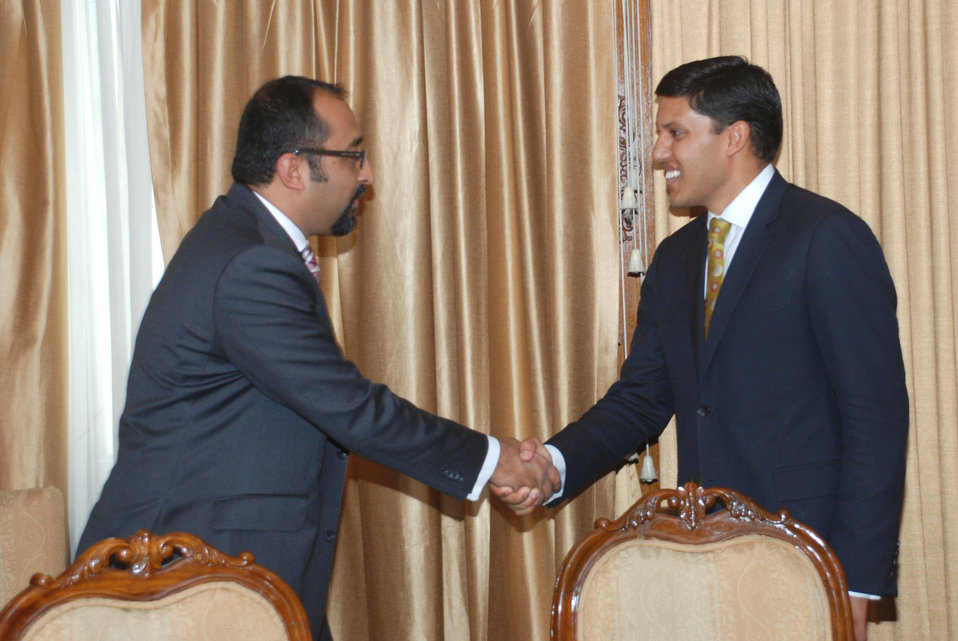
US officials Meeting with Minister of Foreign Affairs, Assistance to Pakistan Remains Strong at Islamabad on April 14, 2012